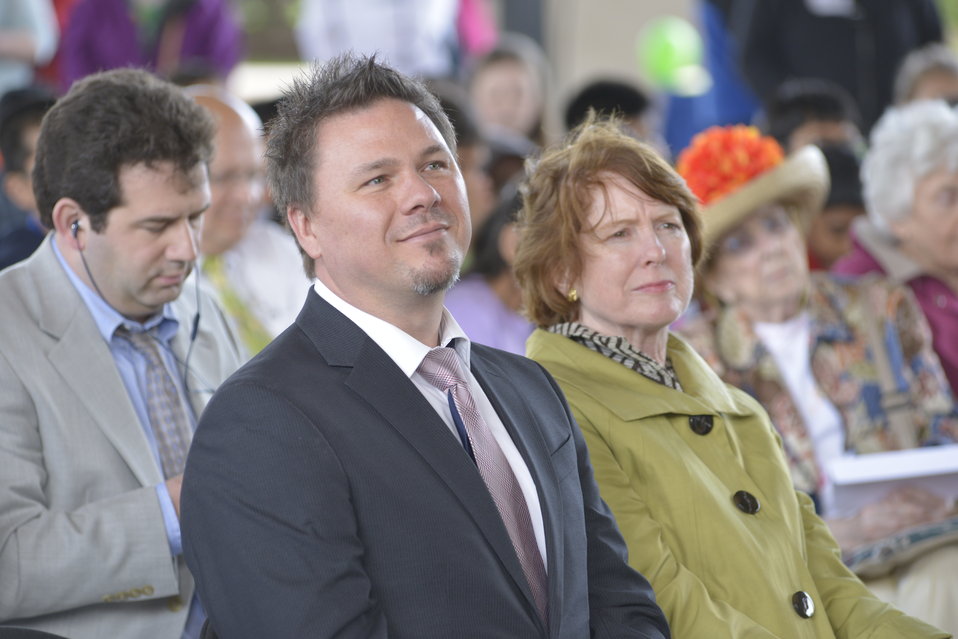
U.S Postal Services introduces a new Global: Sea Surface temperatures forever stamp at the Earth Day program at Department of Energy on April 22, 2014.